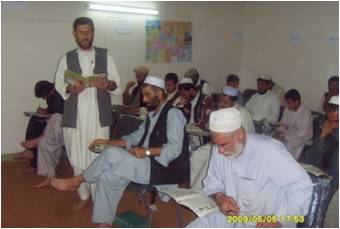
English for Engineers in Afghanistan

Think for a minute about what it might be like to try to learn to use a computer with an English keyboard, having never seen the English alphabet or knowing the English language. Add to that the fact that you’ve never seen a computer in your life and you’re in middle age.

That’s the challenge for Da Afghanistan Breshna Sherkat (DABS - the national electric company) employees at hydro power stations in Afghanistan, many of them having worked at the same power station for more than 15 years. Rehabilitation of the Naghlu Hydro Power Plant began recently and added a computer control system to improve the ability to better control the power generated and conserve the amount of water used to generate that power.

Knowing DABS’ desire to maximize hydro power generation to the Afghan grid, USAID’s Afghanistan Energy Capacity Building (AECB) program anticipated the need for English training at existing hydro sites and new/existing substation, prior to introducing exposure to computers.

DABS employees at Naghlu Hydro Power Plant are studying like they’ve never studied before. Now the trainees understand the need for English to enable them use the computers that will be controlling the hydro power plant they had manually controlled for so many years.

But the real incentive is that the eight engineers with the best English and computer skills will be sent abroad for specialized hydro power plant training related to the operation and maintenance of the latest hydro plant technology, like that being installed at Naghlu.

The Sarobi Hydro Power Plant was upgraded with computer controls before the Naghlu Plant and the Sarobi operators faced the same challenges with the new system, but now all can read the English prompt messages on the computer control screen and go about their operational duties much more comfortably. The Sarobi staff continually tells the AECB instructors to thank USAID for providing this training and allowing them to be more valuable DABS employees.